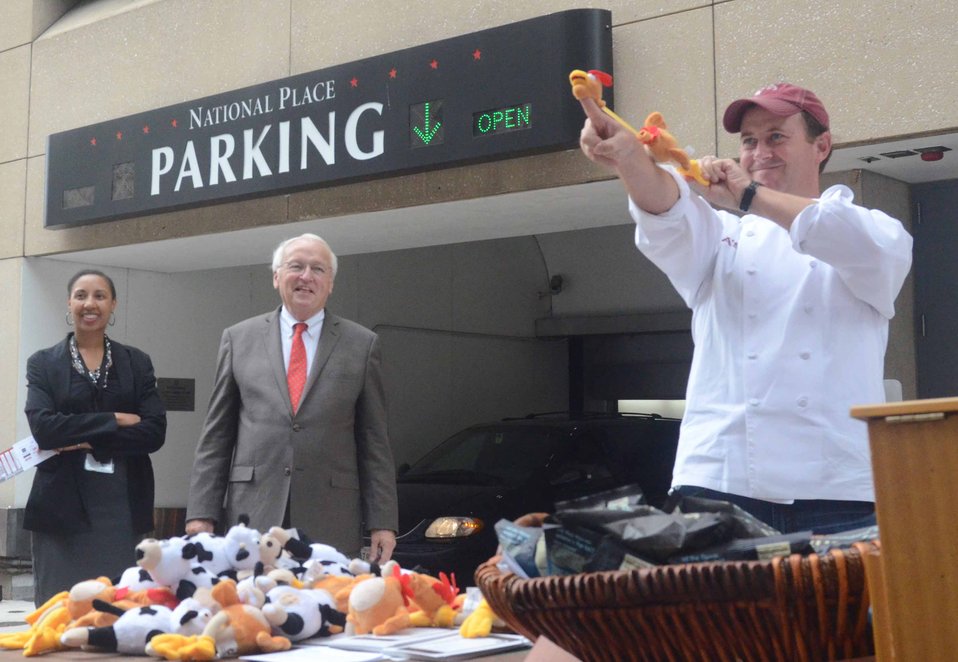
White House Fellow, Dr. Kisha Davis (left), and Under Secretary for Food, Nutrition and Consumer Service, Kevin Concannon, (center) watches Chef Geoffrey Tracy, Owner of Chef Geoff’s Restaurant launch a toy chicken during the “Stuff the Bus Tour” on Wednesday, September 21, 2011, in Washington D.C. The U.S. Department of Agriculture, Food, Nutrition and Consumer Service working with the D.C. Central Kitchen and Venga the sponsors of the “Stuff the Bus Tour”. Over the next two weeks, people can either bring donations or buy products from the virtual market located at the events. All food and proceeds go to D.C. Central Kitchen benefiting thousands of people in the D.C. area.